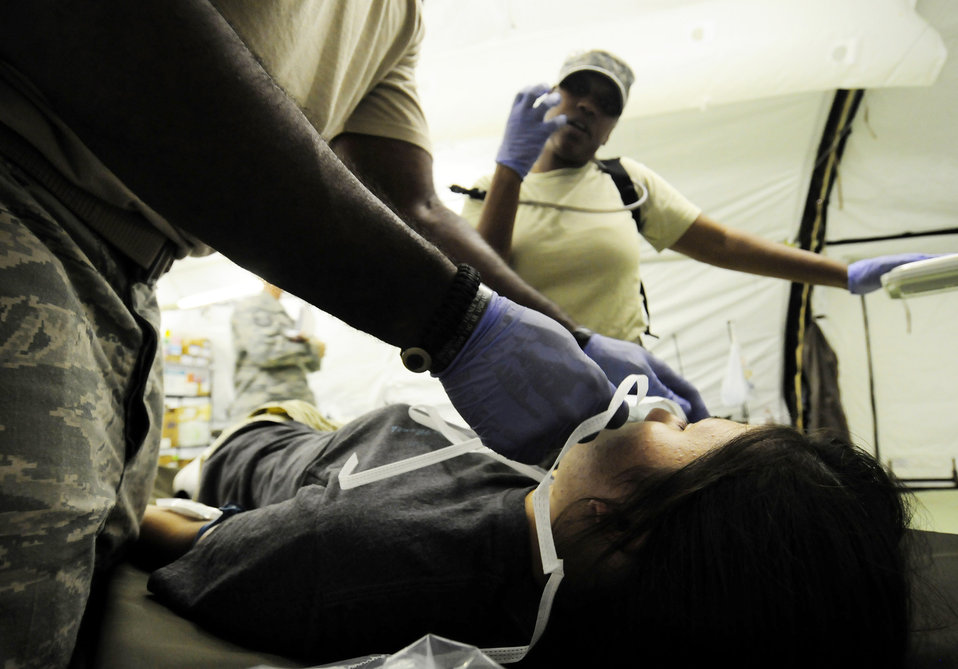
Humanitarian assistance team completes evaluation at Andersen

Staff Sgt. Brandy Verette explains to patient Airman 1st Class Jeanie Snyder what the procedure will be for her condition while Staff Sgt. Courtney Thompson applies a medical face mask during a simulated mass casualty exercise for the Humanitarian Assistance Rapid Response Team July 15 at Andersen Air Force Base, Guam.